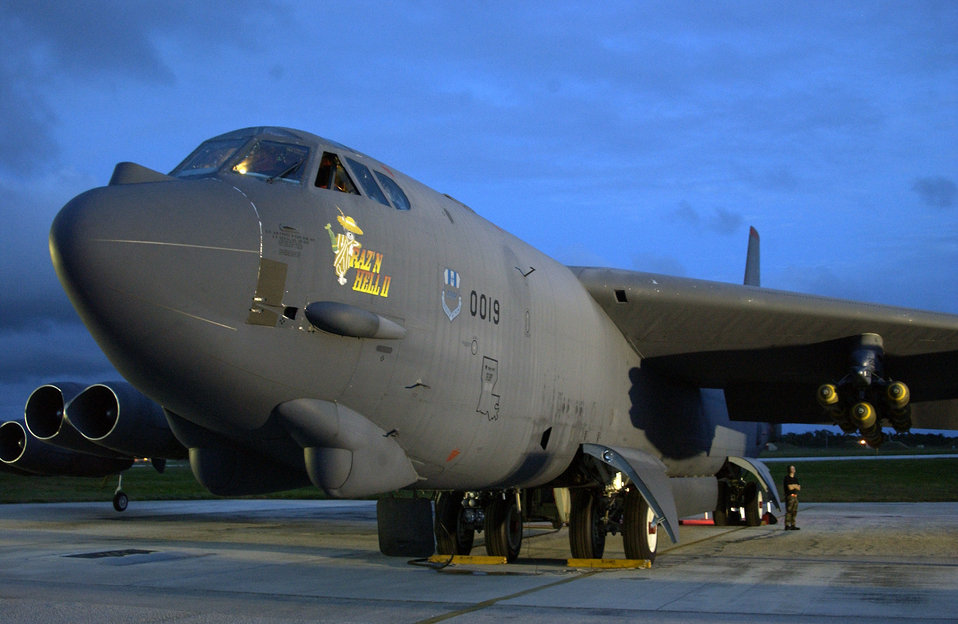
Ever prepared

A B-52 Stratofortress deployed to Andersen Air Force Base, Guam, stands ready Feb. 12 for its next mission. Bombers deployed from the 2nd Bomb Wing at Barksdale AFB, La., provide a continuous bomber presence in the Asia-Pacific region.